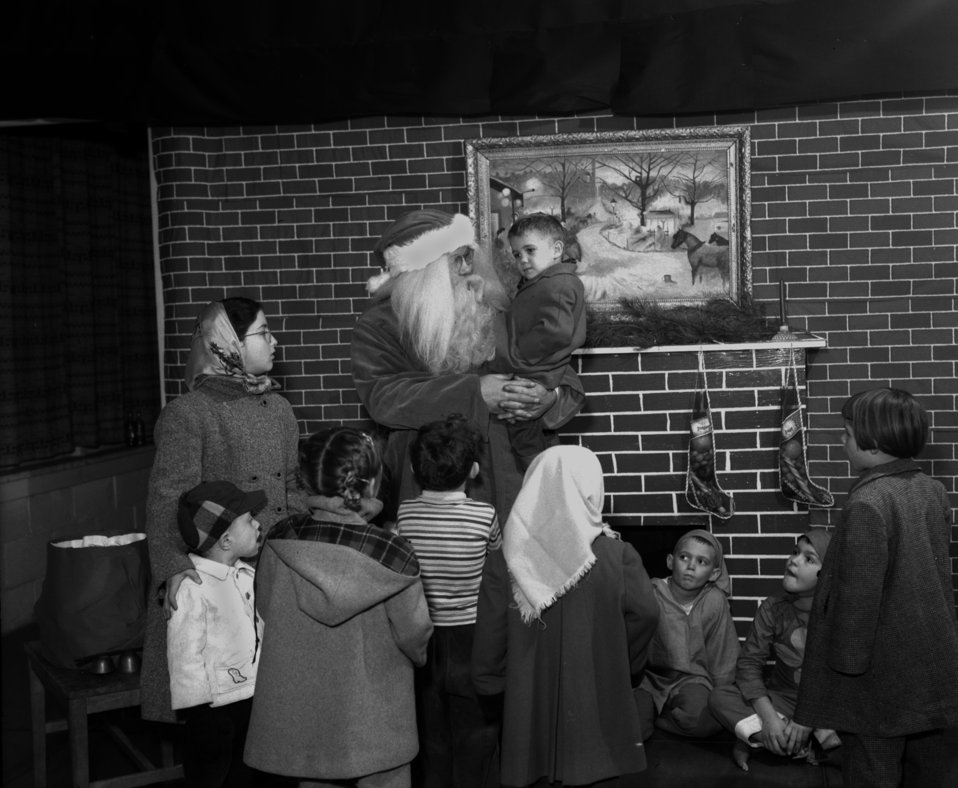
Recreation Dept. Santa Clause Oak Ridge

6371a DOE photo by Ed Westcott

Recreation Dept. Santa Clause Oak Ridge Tennessee 12/20/1950